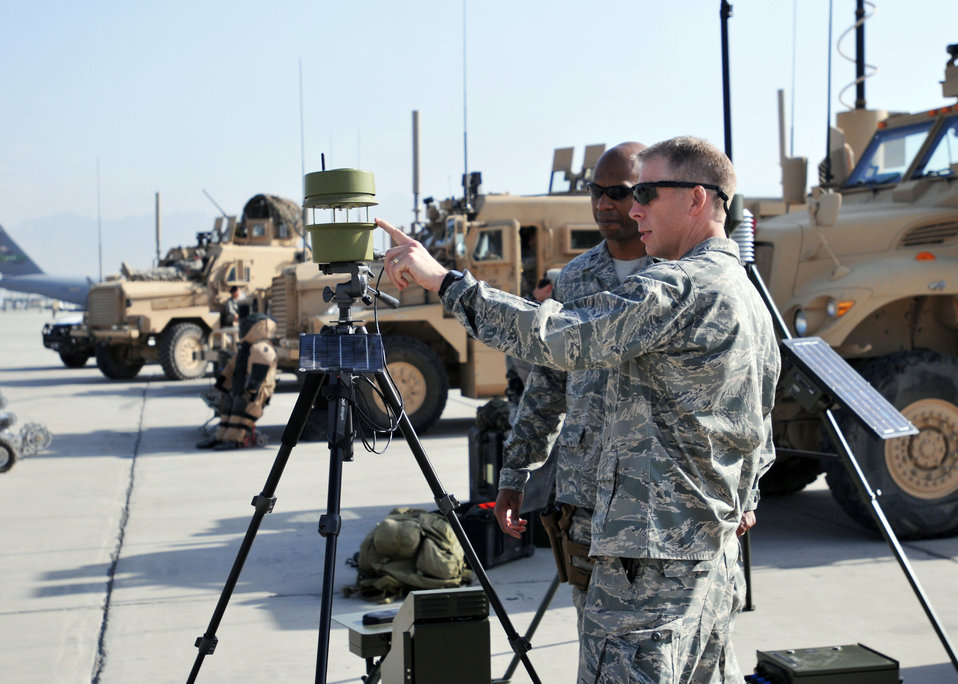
Warfighters take time for Air Force's 62nd birthday

Lt. Col. Brian Griffith discusses battlefield weather capabilities with Capt. Jacob Chisolm at the Air Force's 62nd birthday Sept. 18, 2009, at Bagram Airfield, Afghanistan. Colonel Griffith is the 19th Expeditionary Weather Squadron commander, and Captain Chisolm is the 504th Expeditionary Air Operations Support Group executive officer.